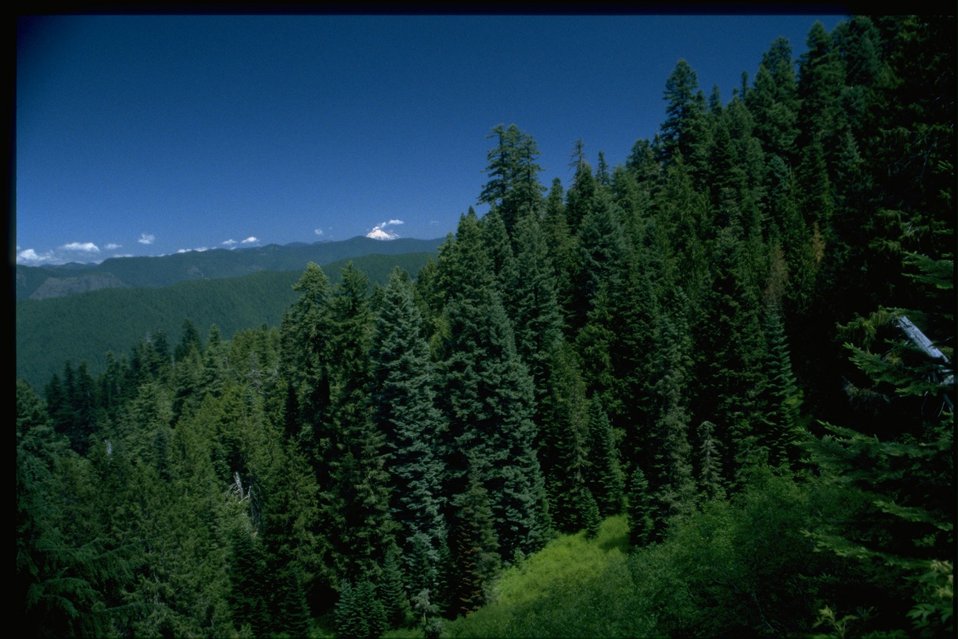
Scenic view from Mt. Horeb, Mt. Hood in the distance.